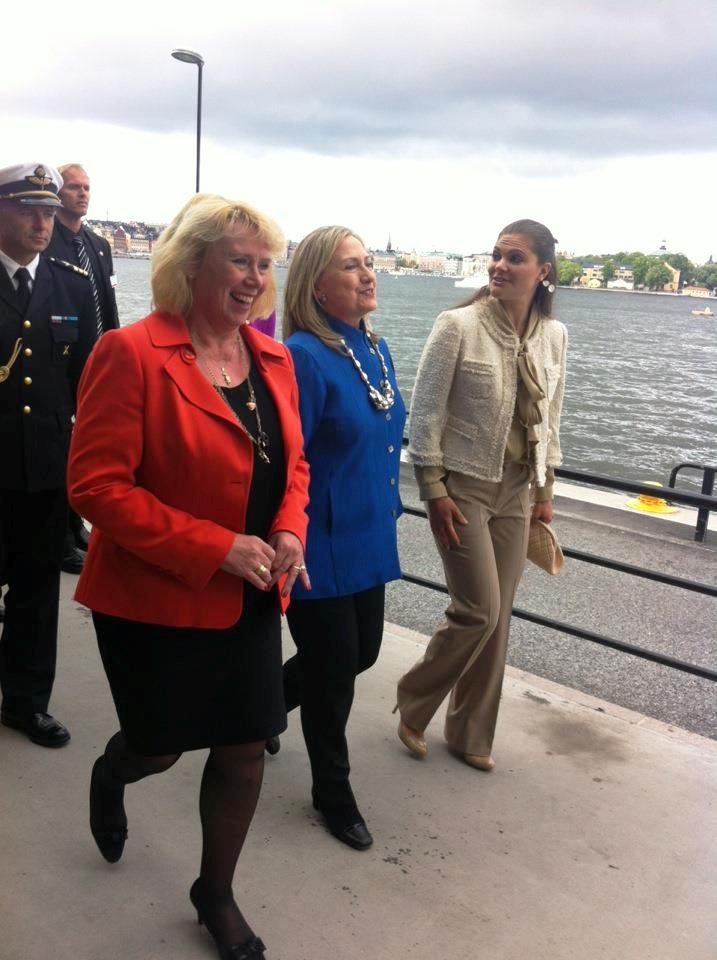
Secretary Clinton Meets With Swedish Crown Princess Victoria and Swedish Environment Minister Lena Ek

U.S. Secretary of State Hillary Rodham Clinton meets with Swedish Crown Princess Victoria and Swedish Minister for the Environment Lena Ek in Stockholm, Sweden, on June 3, 2012.